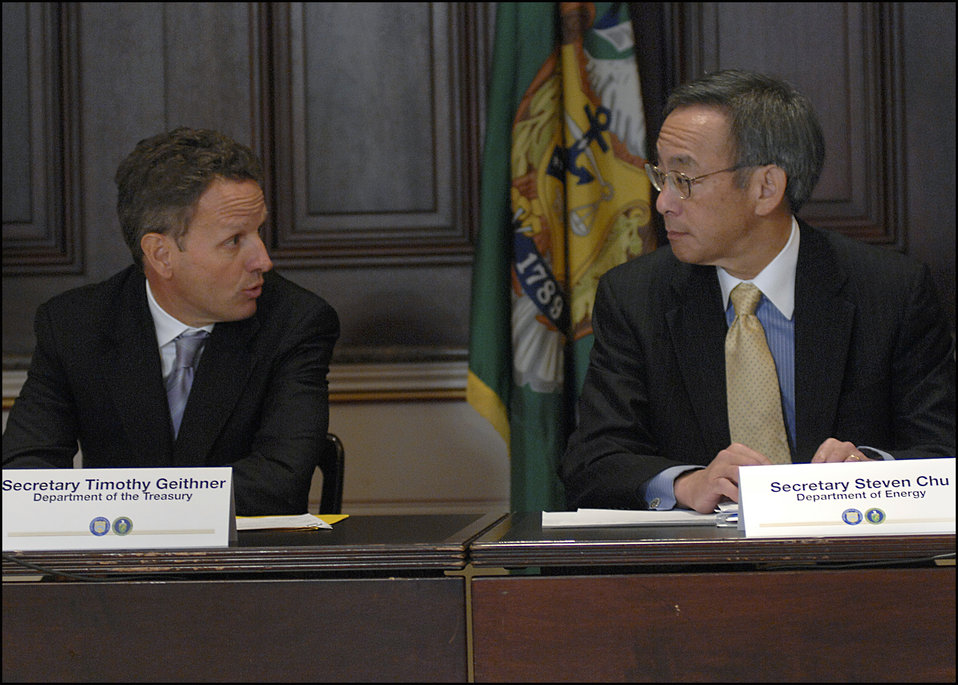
Roundtable053 1